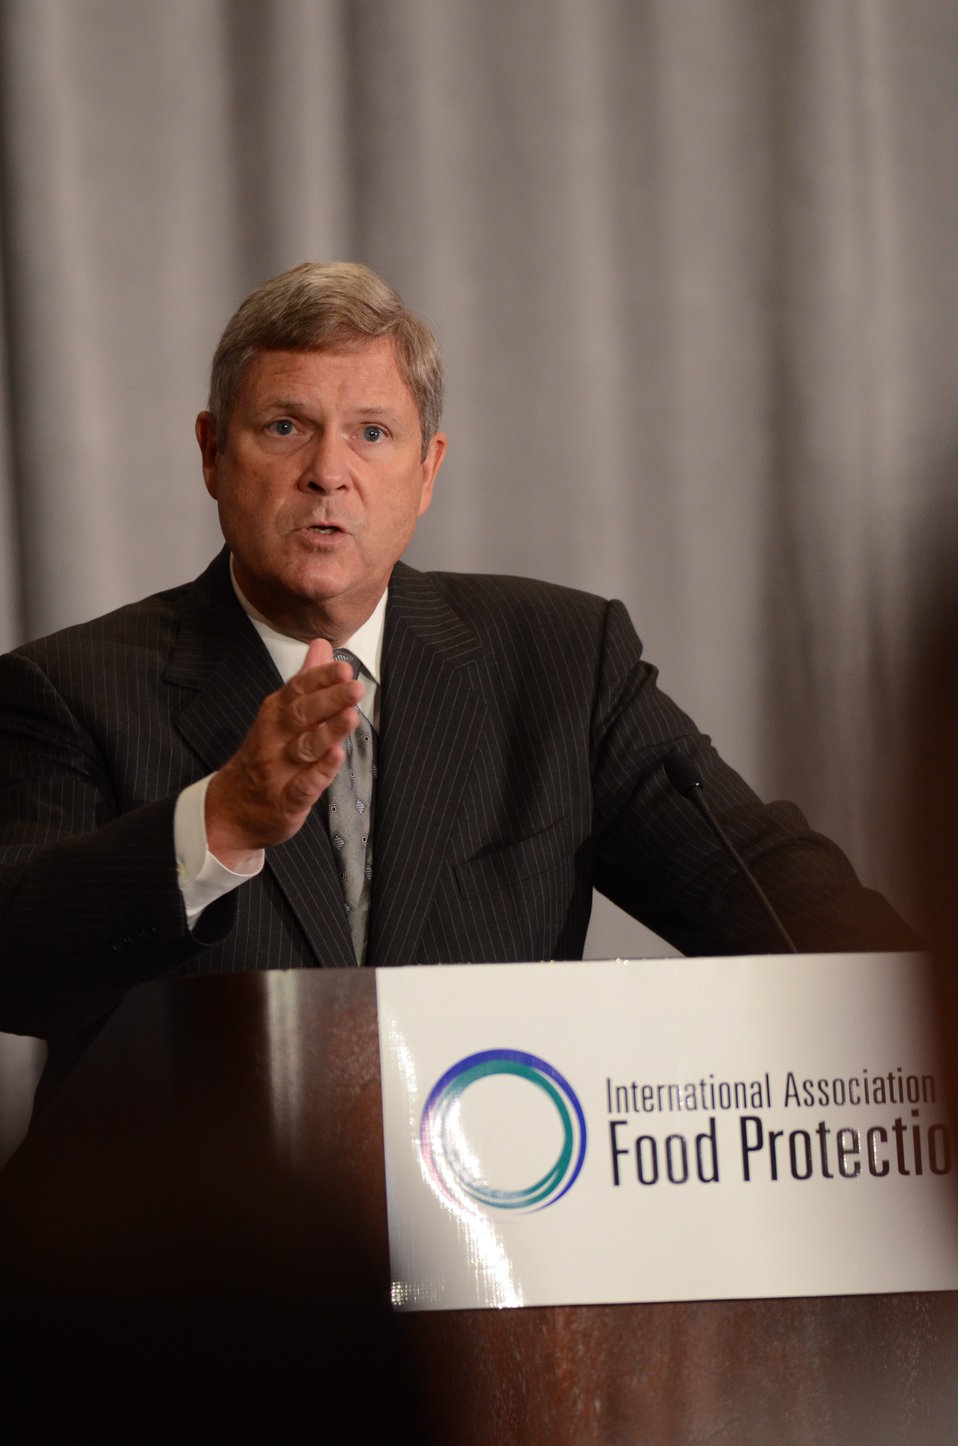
Agriculture Secretary Tom Vilsack speaks at the International Association for Food Protection (IAPP) 100th annual meeting in Milwaukee, WI, on Wednesday, August 3, 2011. IAPP is committed to providing members worldwide with a forum to exchange information on protecting the global food supply.